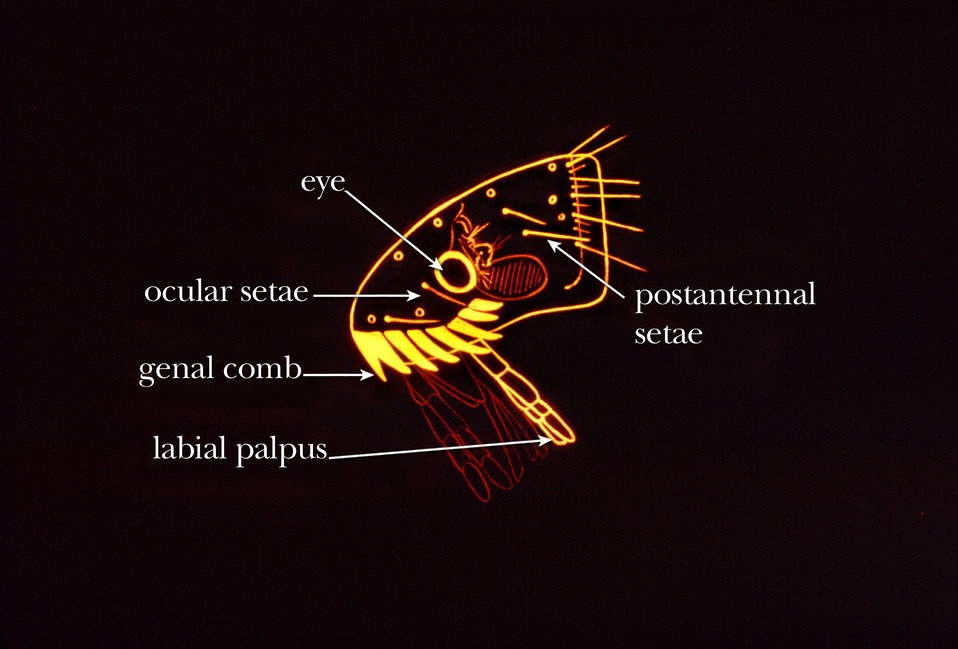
This diagram highlights some common identifying morphologic features found on the head region of fleas.